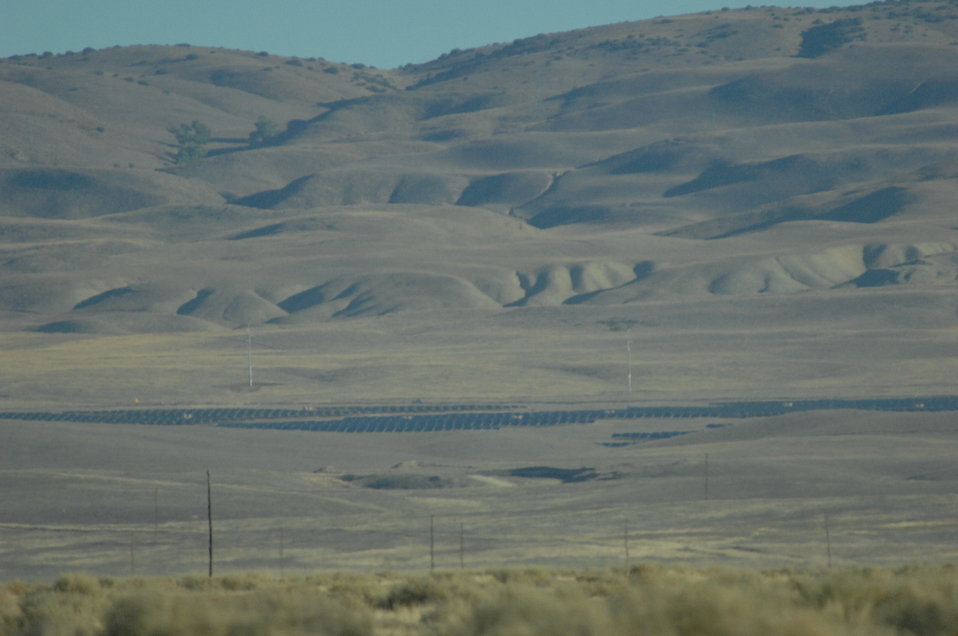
California Valley Solar Ranchfrom Afar on the Carrizo Plain